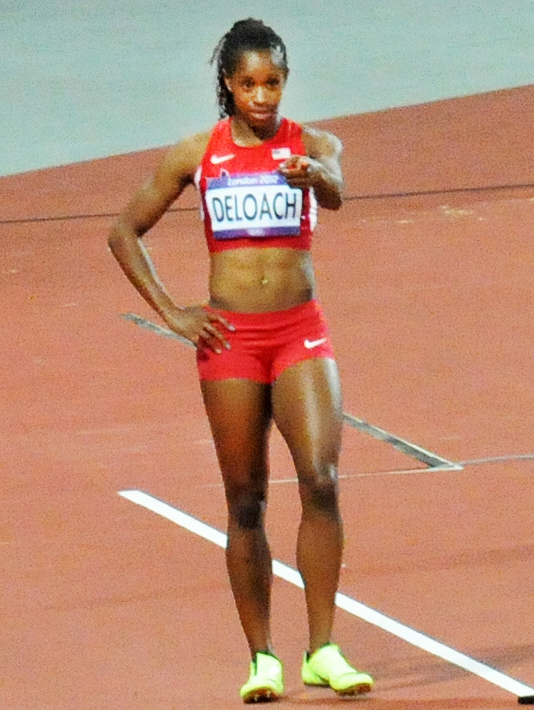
2012 Olympics

Janay DeLoach prepares to make her third long jump Wednesday evening at Olympic Stadium in London. She finished the night with a bronze medal in the event.